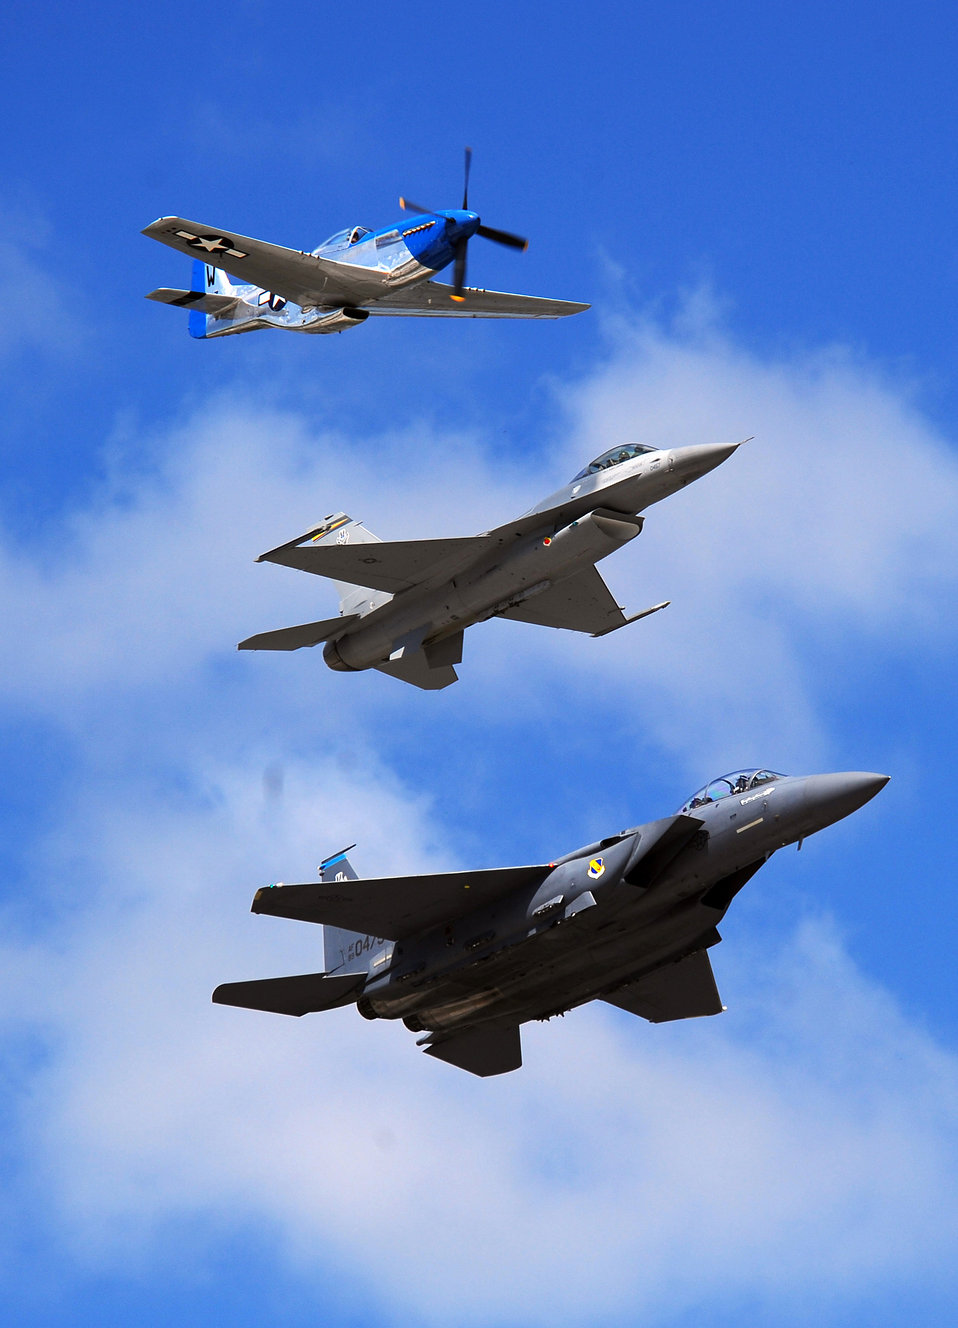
Fighter heritage

At the Offutt Air Force Base, Neb. open house and air show, a P-51 Mustang, an F-16 Fighting Falcon and an F-15E Strike Eagle fly in a heritage formation Aug. 29, 2009. The heritage flight honors the aircraft of both the U.S. Army Air Forces and today's Air Force.